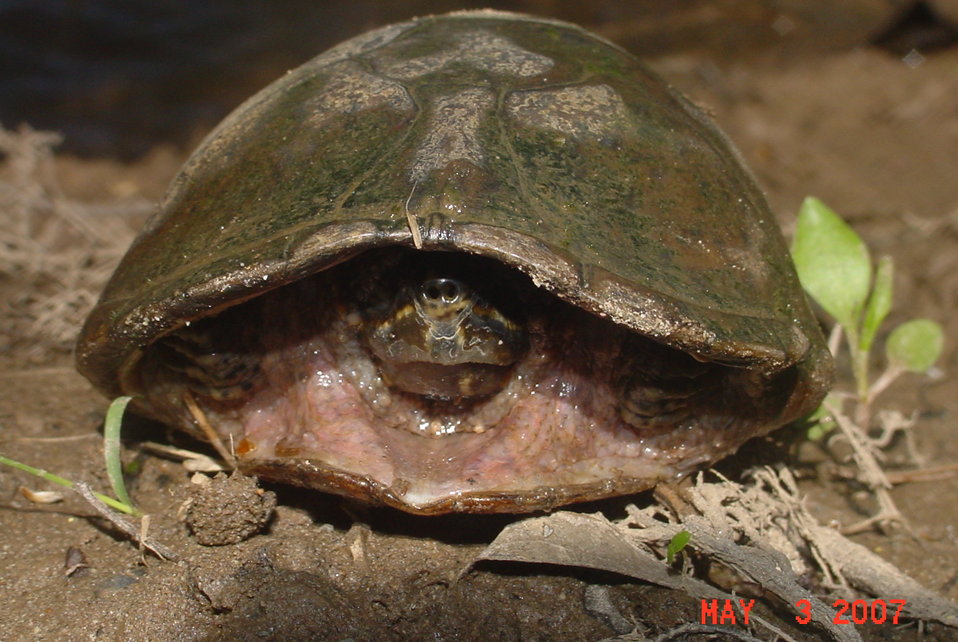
Common Musk Turtle in Shell

Common musk turtles in shell at Great Swamp National Wildlife Refuge